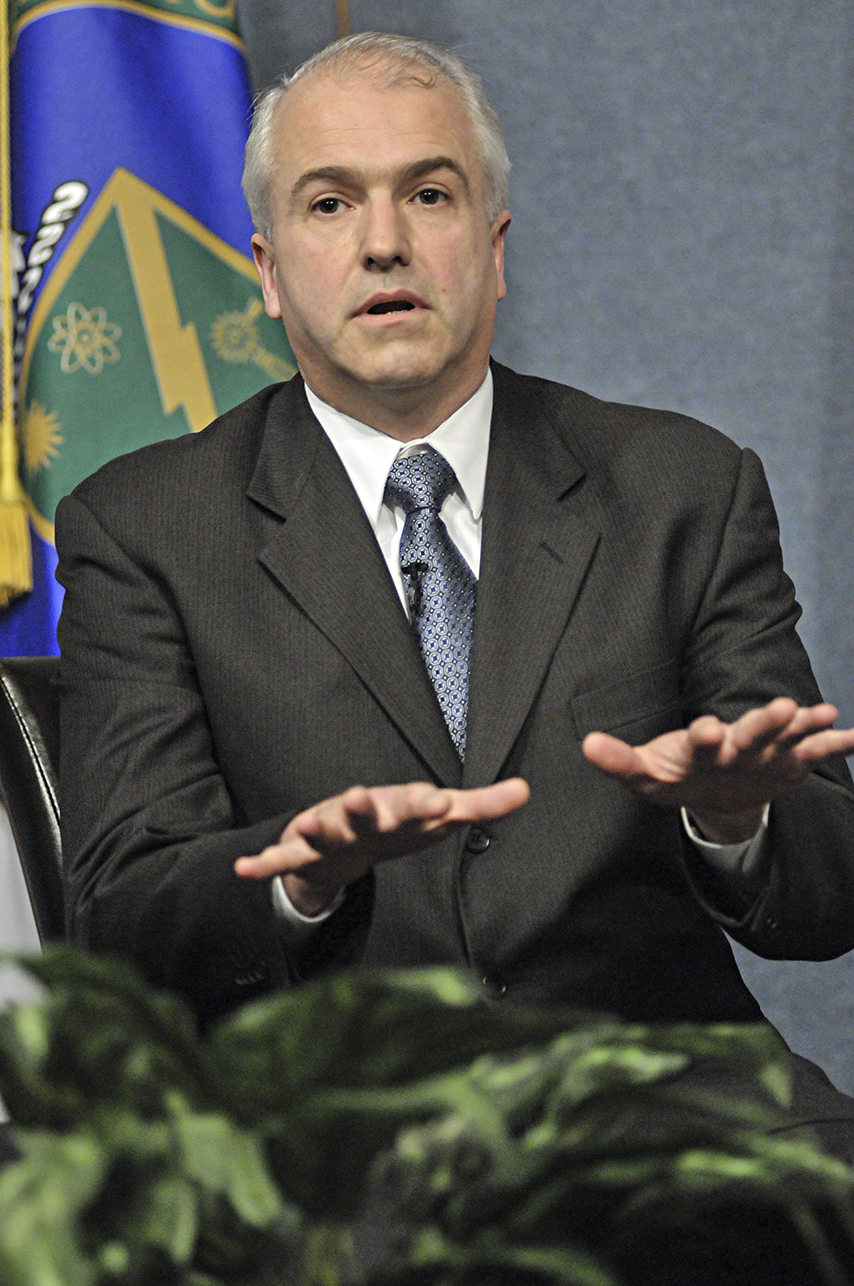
Panel: Increasing Minority Participation in the Energy Sector

Michael Rencheck, President and CEO of AREVA, Inc., speaks on September 24, 2013, at the Minorities in Energy Initiative launch.